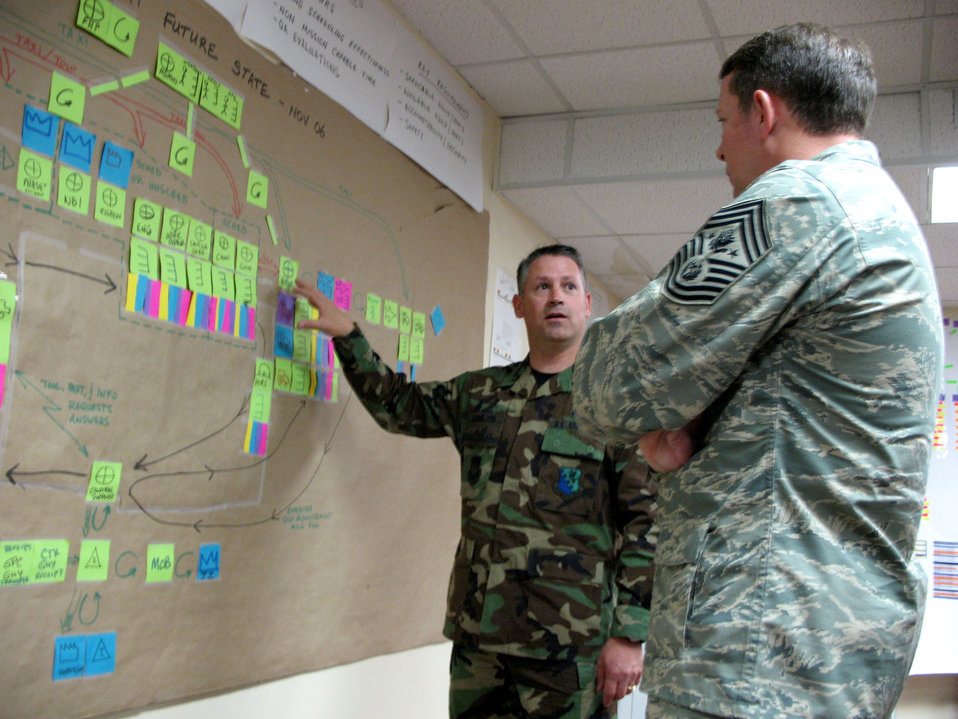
Airmen to continue supporting Army's 'in lieu of' taskings

Chief Master Sergeant of the Air Force, Rodney McKinley (right) learns how Aviano Air Base, Italy, warfighters are saving the Air Force money and helping the warfighting mission. Senior Master Sergeant Jeff Smith gives the CMSAF a brief on future plans for aircraft generation at the 31st Fighter Wing. Sergeant Smith is assigned to the 31st Aircraft Maintenance Squadron.